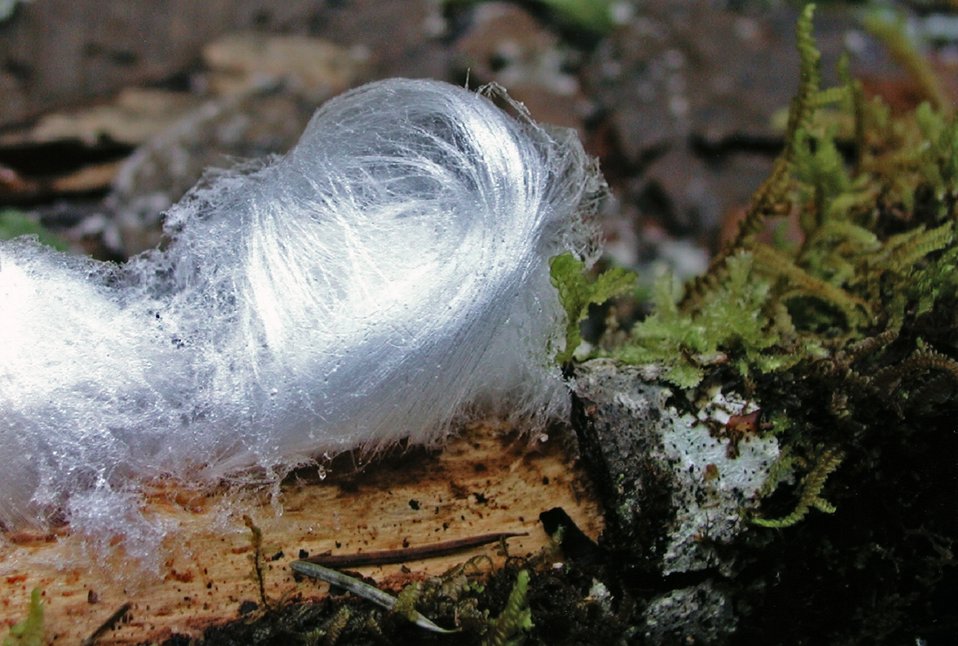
January Frost. Loon Lake John Colby, Coos Bay Art2